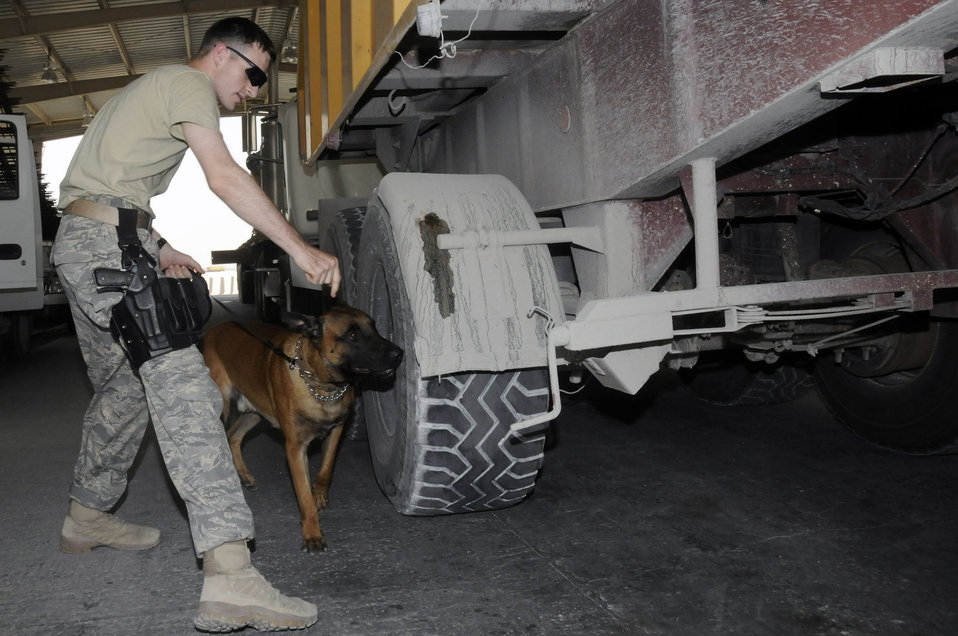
Nothing gets past us

Staff Sgt. Logan Ray and Lennox check a truck Aug. 19 waiting to enter an air base in Southwest Asia. Sergeant Ray, a military working dog handler assigned to the 379th Expeditionary Security Forces Squadron, and the rest of his team ensure the safety and security of the air base by carefully inspecting all incoming vehicles for explosives and weapons. Sergeant Ray, a native of Hyattsville, Md., is deployed from Andrews Air Force Base, Md.